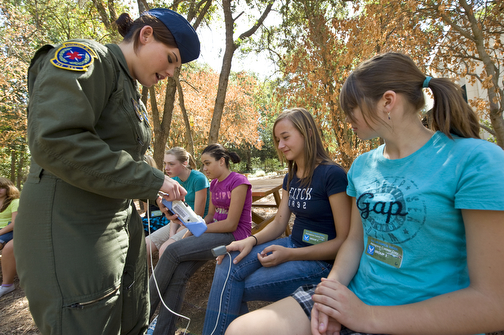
Air Force Week-Sacramento

Senior Airman Amanda Camp takes the blood pressure of 8th grade students from Arcade Middle School in Sacramento, Calif., while explaining the duties of her profession during aerospace career day at Discovery Museum of Sacramento for Air Force Week, Sept. 10, 2009. Air Force Week-Sacramento is an event using various activities and exhibitions to educate the community about the Air Force's capabilities and missions. Airman Camp is an aeromedical evacuation technician at Travis Air Force Base, Calif.